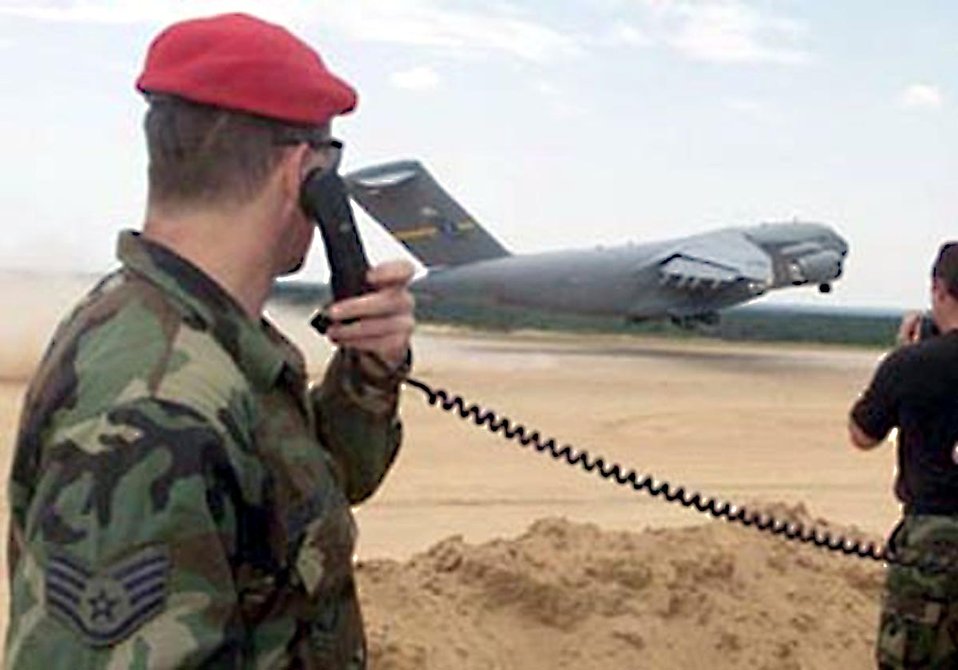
Combat controller

HURLBURT FIELD, Fla. -- Combat controllers from here train at an undisclosed location. Air Force combat controller teams support special operations under clandestine, covert or low-visibility conditions.